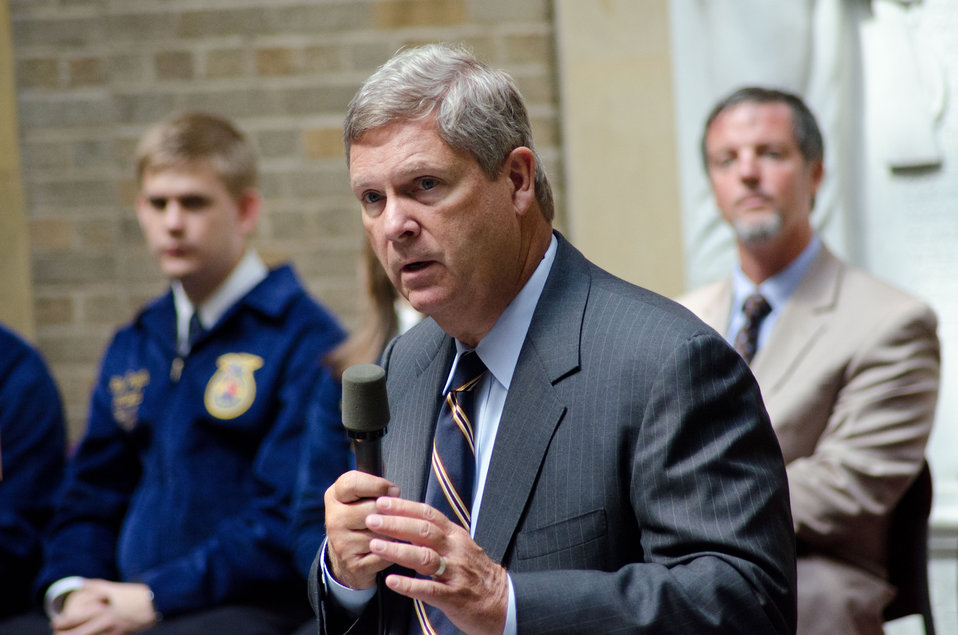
Agriculture Secretary Tom Vilsack speaks with the National Future Farmers of America (FFA) leadership at the U.S. Department of Agriculture Patio in Washington, DC, on Thursday, Juyly 28, 2011.